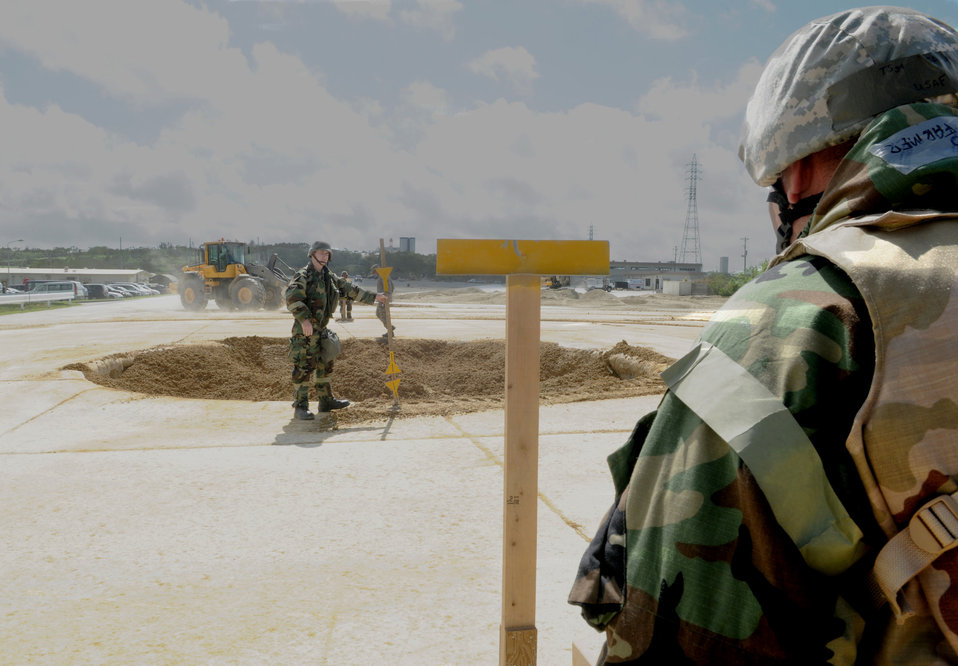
Silver Flag

Tech. Sgt. Mark Farmer and Airman 1st Class Cheston Biernacki measure the line-of-sight upheaval from a simulated blast June 28, 2011, during Silver Flag at Kadena Air Base, Japan. Sergeant Farmer is a pavement and heavy-equipment operator assigned to the 647th Civil Engineer Squadron at Joint Base Pearl Harbor-Hickam, Hawaii. Airman Biernacki is a pavement apprentice assigned to the 35th Civil Engineer Squadron at Misawa Air Base, Japan.